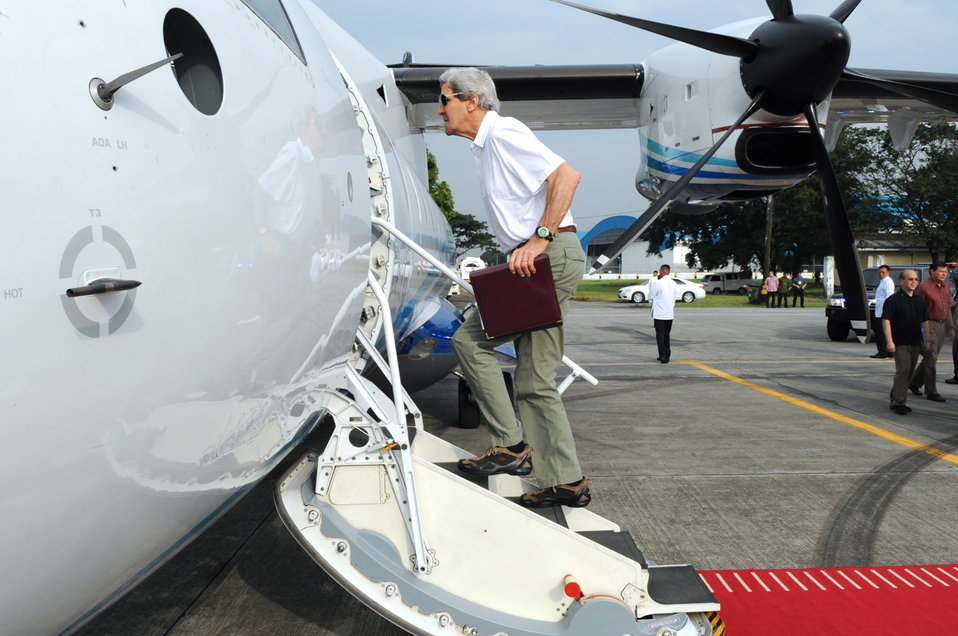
Secretary Kerry Boards an Aircraft to Fly to Tacloban City, Philippines

U.S. Secretary of State John Kerry boards a propeller plane for the flight from Manila to Tacloban City, Philippines, on December 18, 2013, to inspect damage from Typhoon Haiyan and to announce $25 million in fresh U.S. aid for recovery efforts.